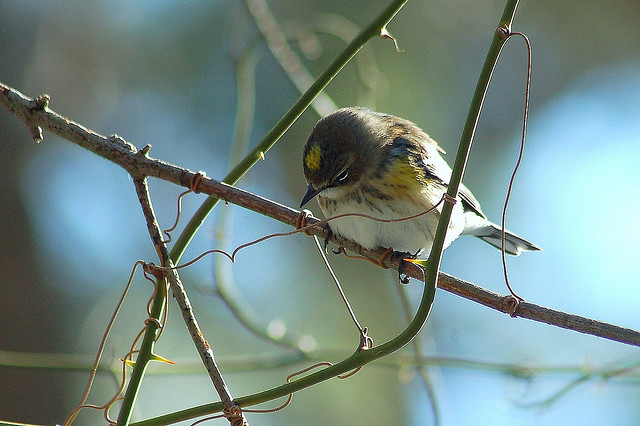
yellow rumped warbler

Prime Hook National Wildlife Refuge